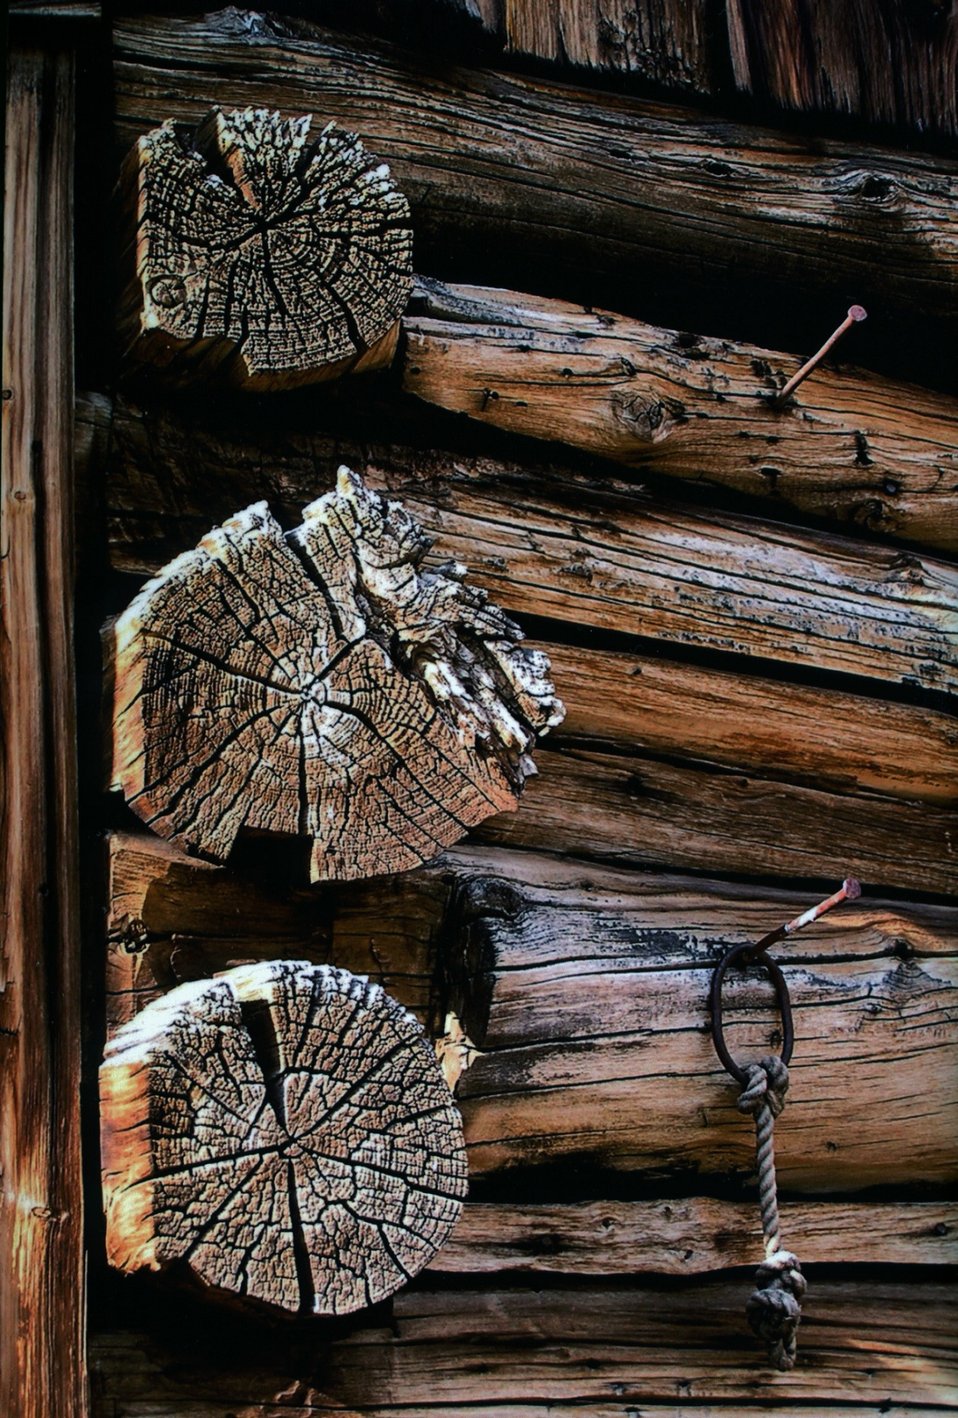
Corner of Riddle Ranchhouse. 2004 Jerry Magee Cultural 1